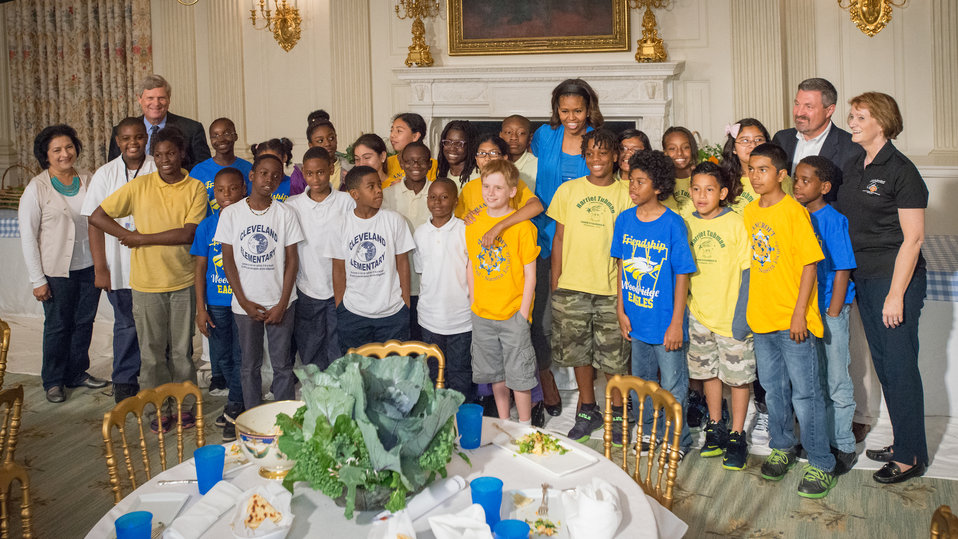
First Lady Michelle Obama and Agriculture Secretary Tom Vilsack join Washington, D.C. students from Cleveland Elementary School, Friendship Public Charter School, Kimball Elementary School, Bancroft Elementary School, Harriet Tubman Elementary School, who helped plant the garden in the spring, make lunch from this year’s summer crop with the help of White House chefs and visiting school nutrition directors from Orlando, FL, Dallas, TX, and West Virginia in the State Dining Room of the White House in Washington, D.C. on Thursday, Jun. 12, 2014. (Adults L to R Dallas Independent School Food and Child Nutrition Services Department Executive Director Dora Rivas, MS, RDN, SNS, Agriculture Secretary Tom Vilsack, First Lady Michelle Obama, West Virginia Department of Education Office of Child Nutrition Executive Director Richard Goff MBA, and Orange County Public Schools Food and Nutrition Services Senior Director Lora Gilbert, MS, RD, FADA, SNS).